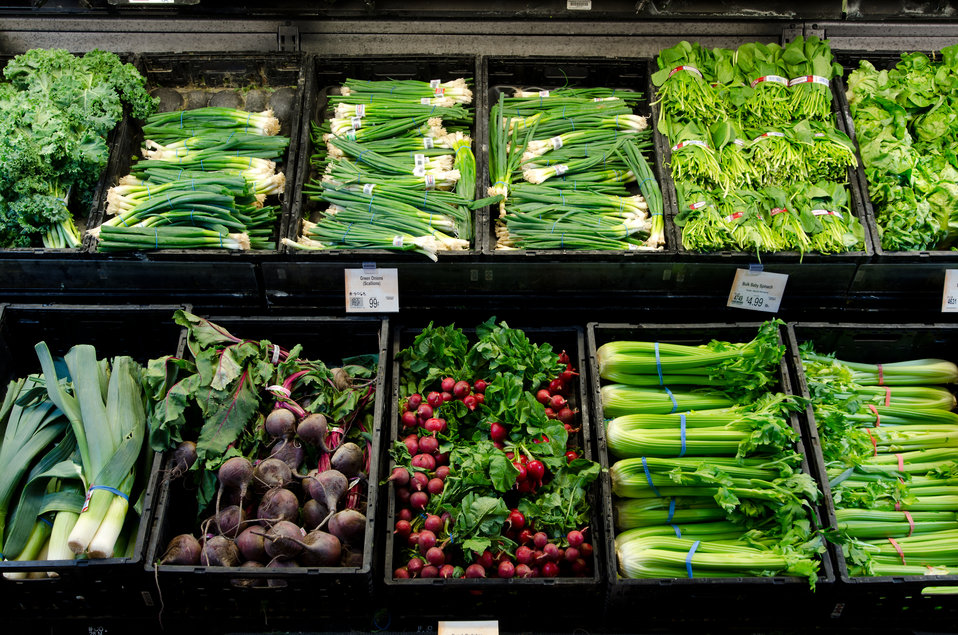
Leafy green produce at a grocery store in Fairfax, Virginia, on March 3, 2011.